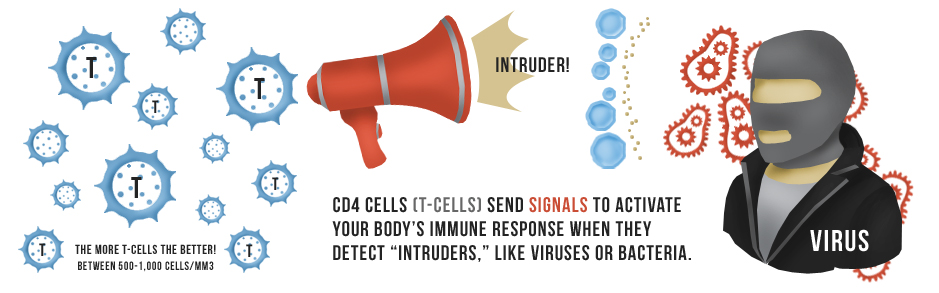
cd4 count